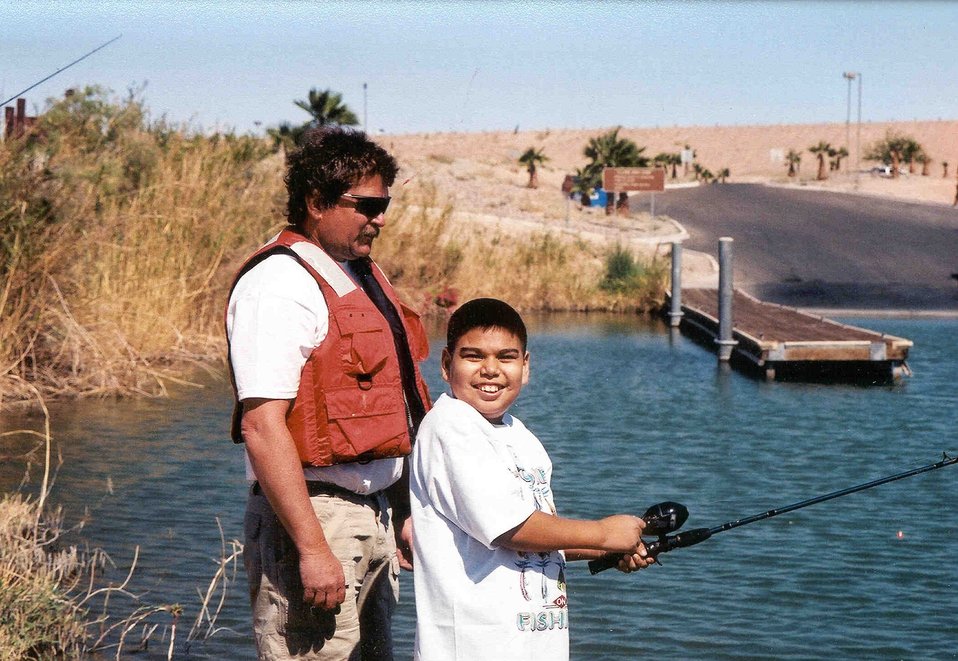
Mentally and physically challenged young people enjoying fishing and boating in celebration of National Fishing and Boating Week.